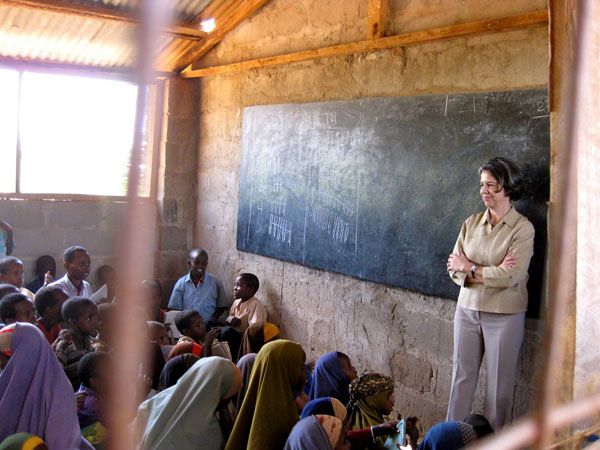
Under Secretary Otero Observes Kenyan Classroom

U.S. Under Secretary for Democracy and Global Affairs Maria Otero observes a classroom, January 29, 2010, Dadaab, Kenya.